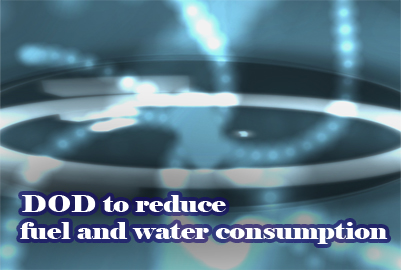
DOD to reduce fuel and wanter consumption